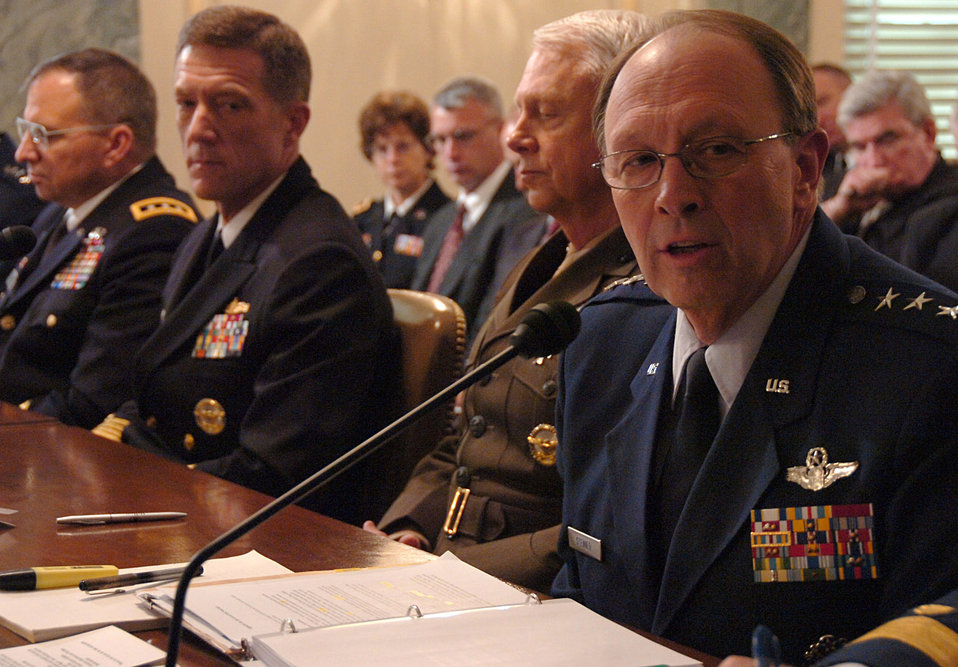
Reserve commander briefs Congress about Air Force Reserve

Lt. Gen. Charles E. Stenner Jr. (right), chief of the Air Force Reserve and commander of Air Force Reserve Command, testifies before the U.S. Senate?s Subcommittee on Appropriations March 25 in Washington, D.C. Testifying with General Stenner were the chiefs of the other reserve components.